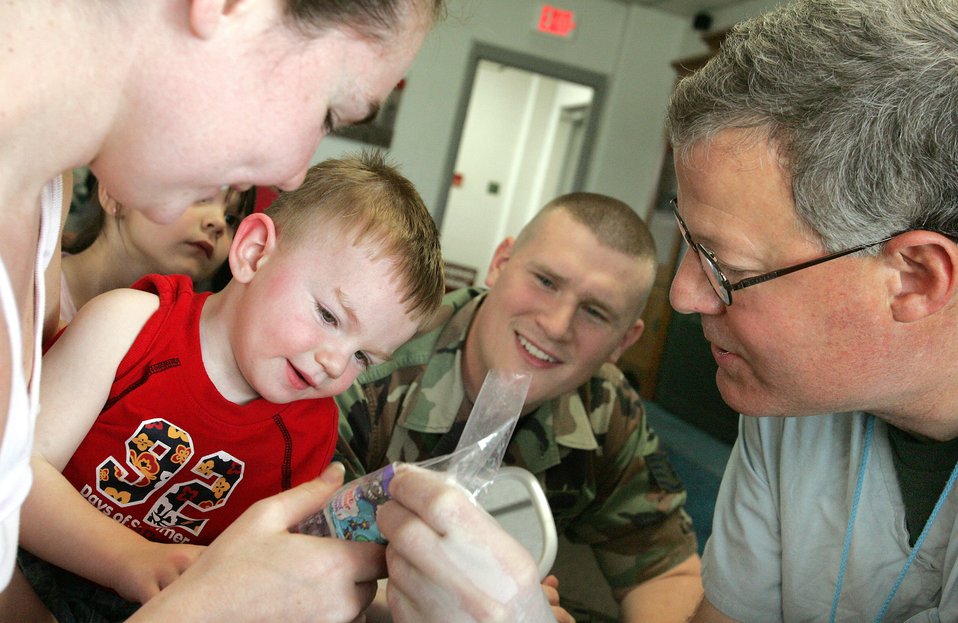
Good habits start early

Col. (Dr.) Jeffery Mabry hands 2-year-old Tryston Bellon a toy after his dental exam at the Skylark Community Center at Lackland Air Force Base, Texas, on Wednesday, May 10, 2006. The pediatric dental department at Lackland provides drop-in dental screenings as part of their pediatric dental training program. Colonel Mabry is director of pediatric dentistry with the 59th Dental Squadron.